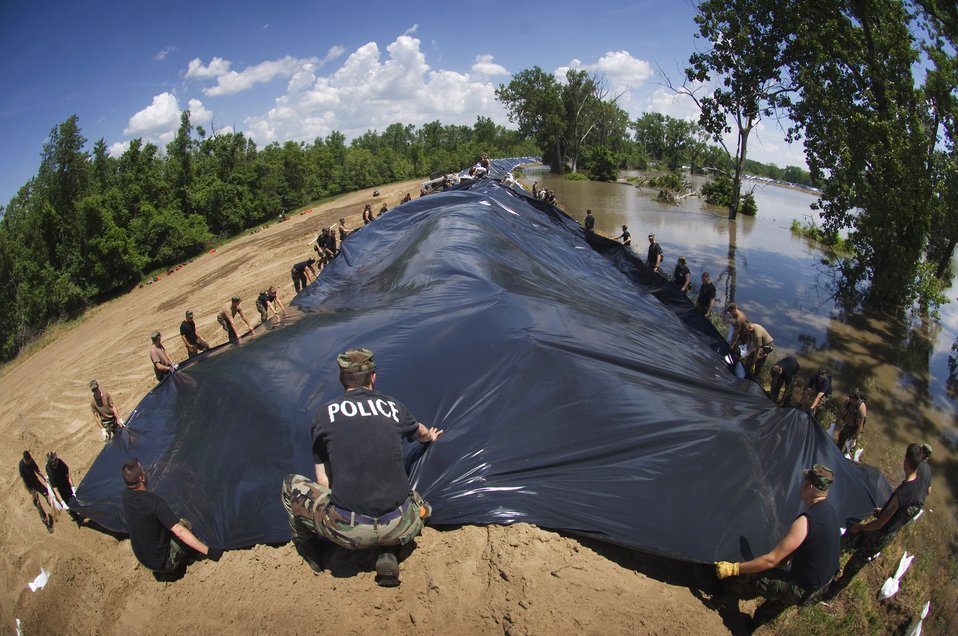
An ounce of prevention

Airmen from the Illinois Air National Guard spread sheets of plastic over reinforced levees along the Mississippi River June 19 near Pleasant Hill, Ill. The plastic sheets prevent erosion that could cause the levee to fail and flood thousands of acres of farmland and homes.